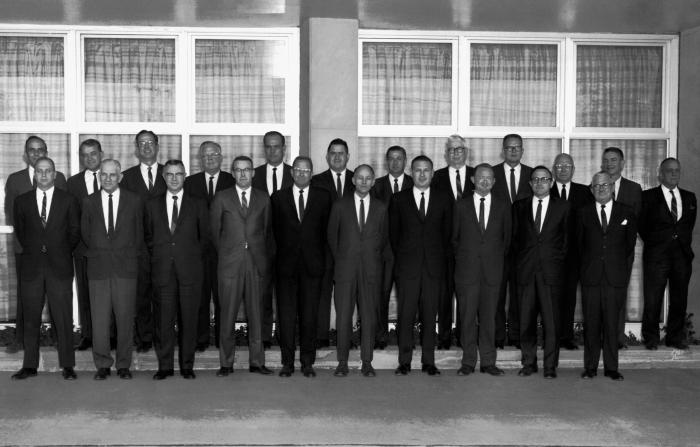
This 1966 photograph showed the staff members of Centers for Disease Control's Venereal Disease department, which was taken during the annual meeting of the CDC's Regional Venereal Disease Program.